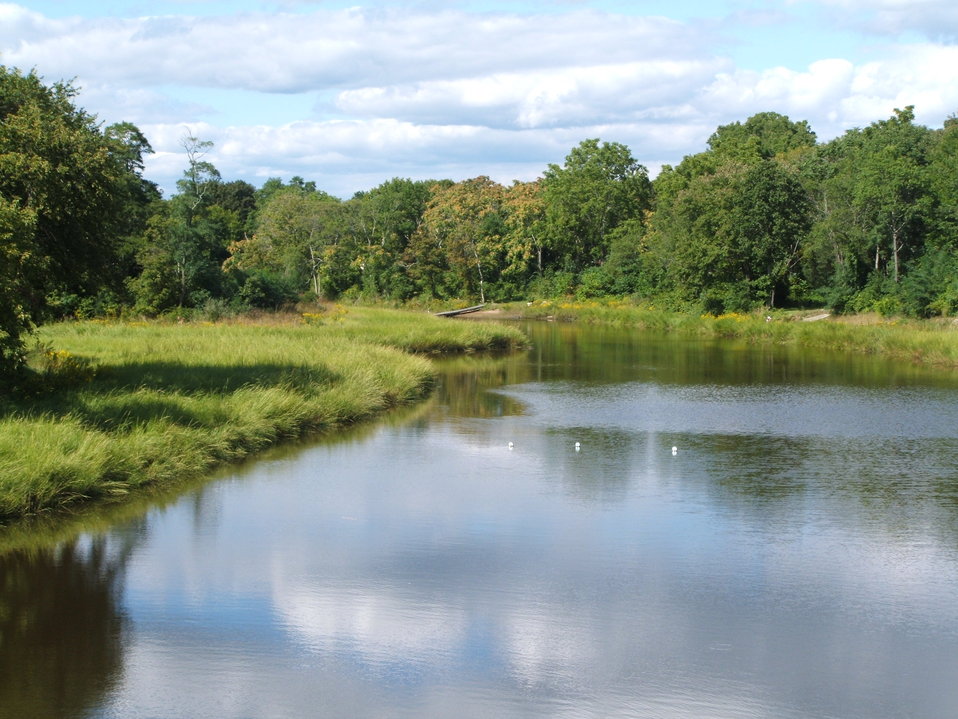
'After' and to this day (when sunny)

The river banks were restored and replanted with native species of wetlands grasses. In addition to the contaminated sediment that had been removed, EPA also removed invasive species that had taken over the shorelines.

Each year, EPA's cleanup contractors sample the river sediment and shoreline areas to monitor potential recontamination from the tidal activity in the harbor. While from time to time we see recontamination in the subtidal zone, the shoreline areas remain successfully clean.

While significant work remains in the harbor further south from where this photo was taken, this area is an encouraging place to see how the river can be successfully restored.

More and more each year this area is becoming a favorite spot for increasing numbers of birds, fish and other wildlife that some of us can't help but count each time we stop by.